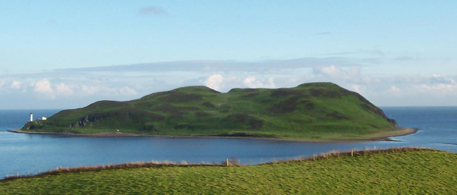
Davaar Island at the mouth of Campbeltown Loch.